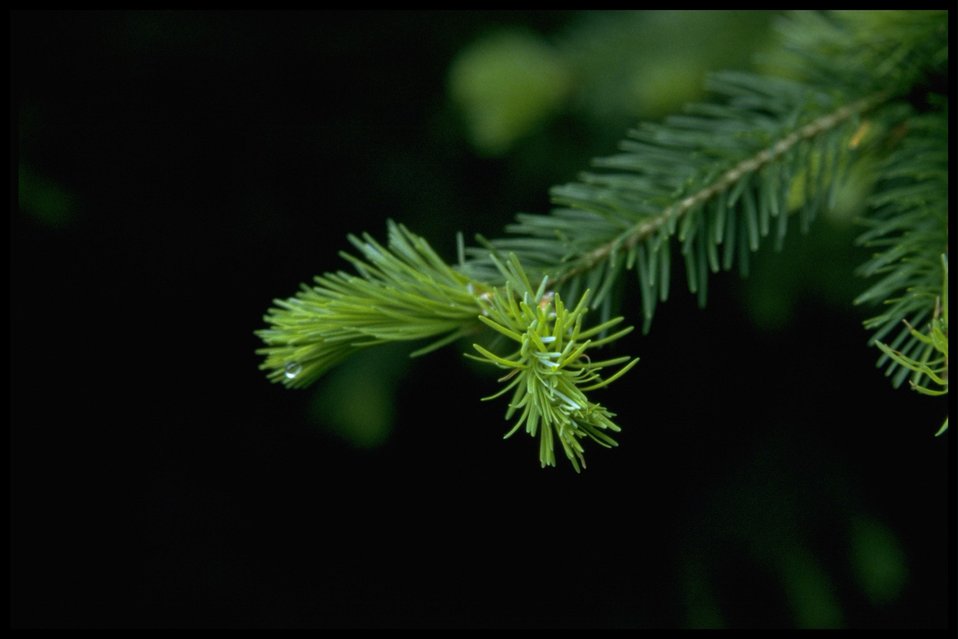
Closeup shot of new conifer growth.